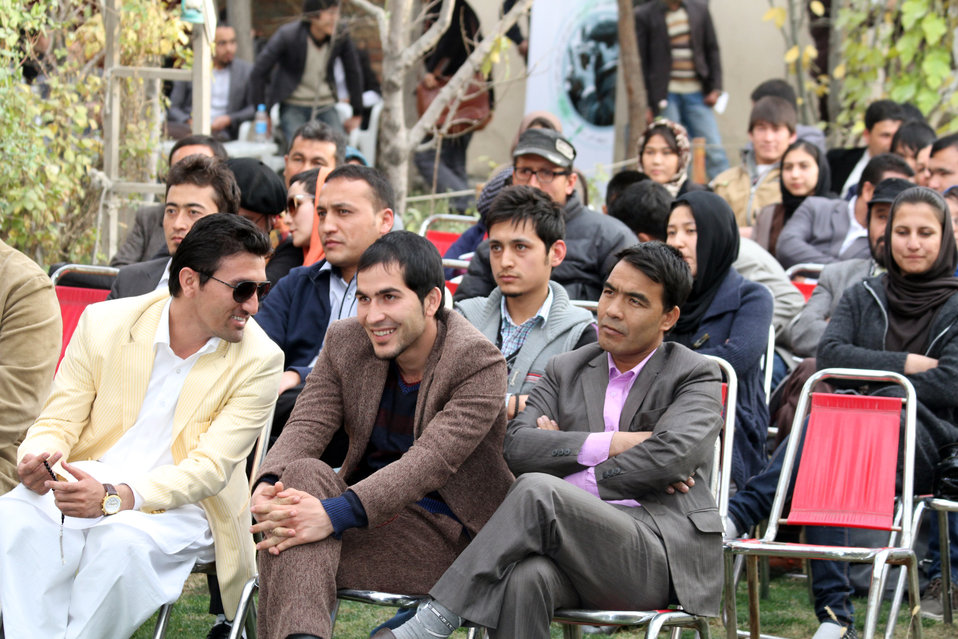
Afghan Youth Festival

Internews - USAID